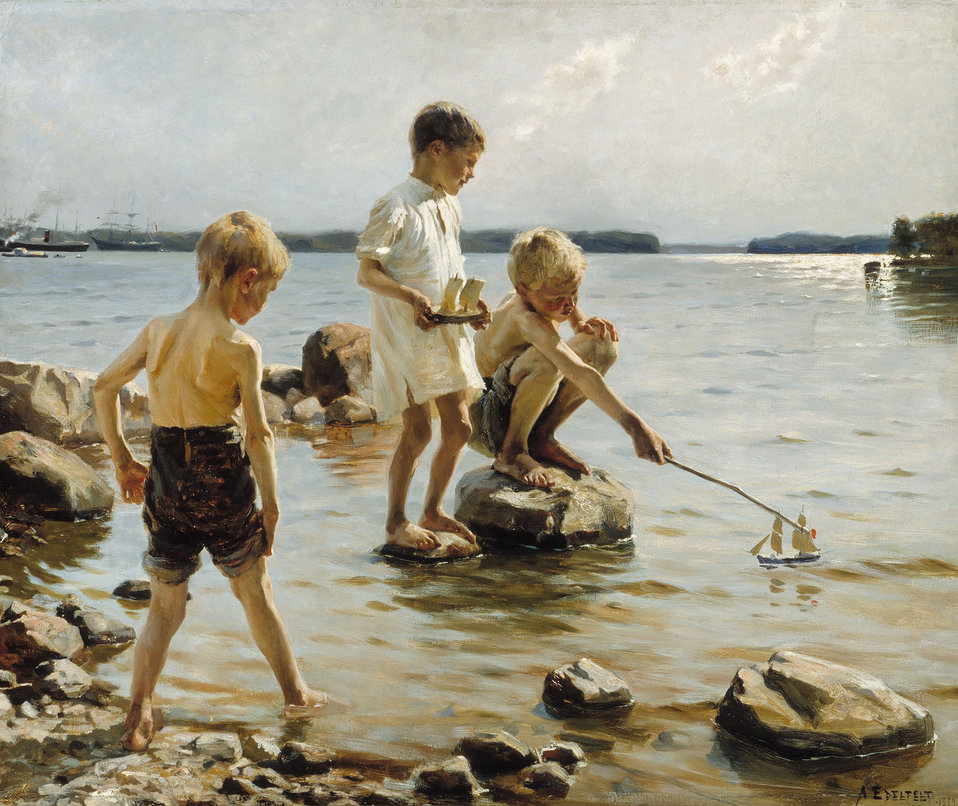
Albert Edelfelt - Leikkiviä poikia rannalla